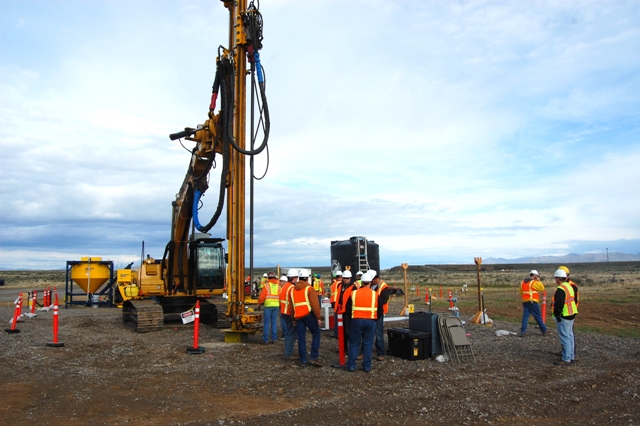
Idaho Small Business at Work

Workers with small business Hayward Baker, Inc., injected cement-based grout into 21 buried waste locations to stop rain and snow melt from infiltrating the contaminated waste produced during historic operations at the Idaho site.